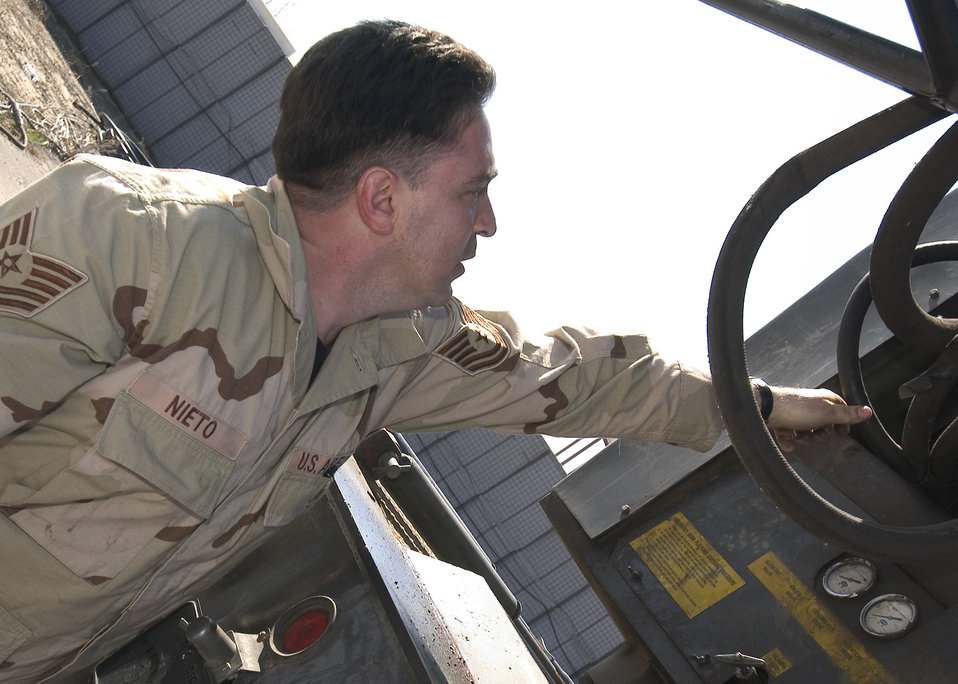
Saving the Condor

MANAS AIR BASE, Kyrgyzstan -- Tech. Sgt. Darrin Nieto inspects hydraulic hoses on the Condor de-icing vehicle here. He is the noncommissioned officer in charge of vehicle maintenance with the 376th Expeditionary Logistics Readiness Squadron. He is deployed from Dyess Air Force Base, Texas.